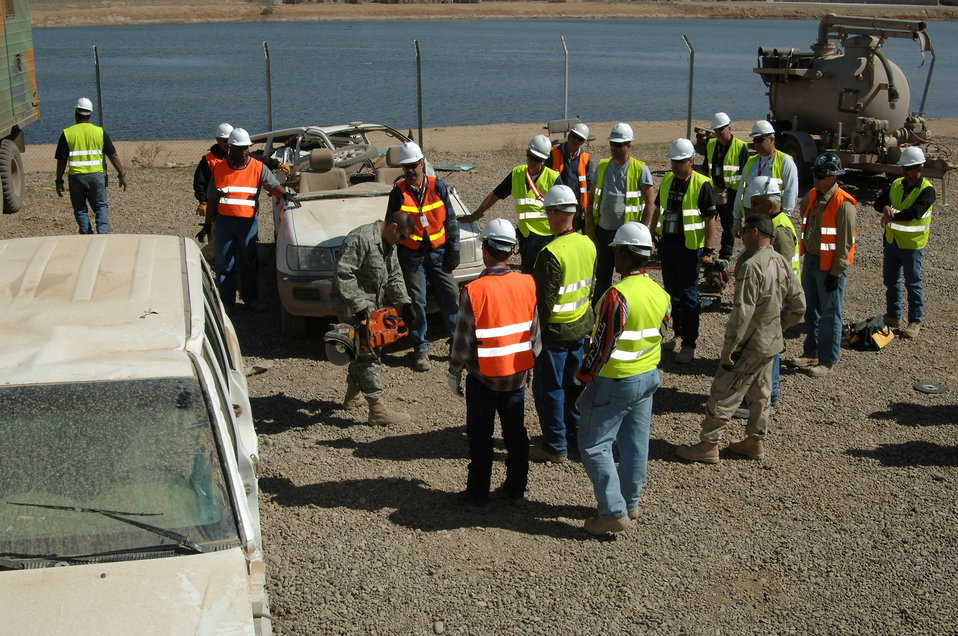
Balad Airmen teach contractors lifesaving skills

Tech. Sgt. Christopher McArdle demonstrates for KBR Theater Transportation Mission Recovery senior mechanics the proper way to wield a circular saw during a refresher training session on using hydraulic tools March 5 at Balad Air Base, Iraq. The class, a first for the Balad AB fire department, marked an important step for the U.S. government contractors to train jointly with Airmen. The TTM Recovery personnel are responsible for retrieving stuck, broken down and destroyed military vehicles throughout Iraq. Sergeant McArdle is a 332nd Expeditionary Civil Engineer Squadron Fire Department firefighter.